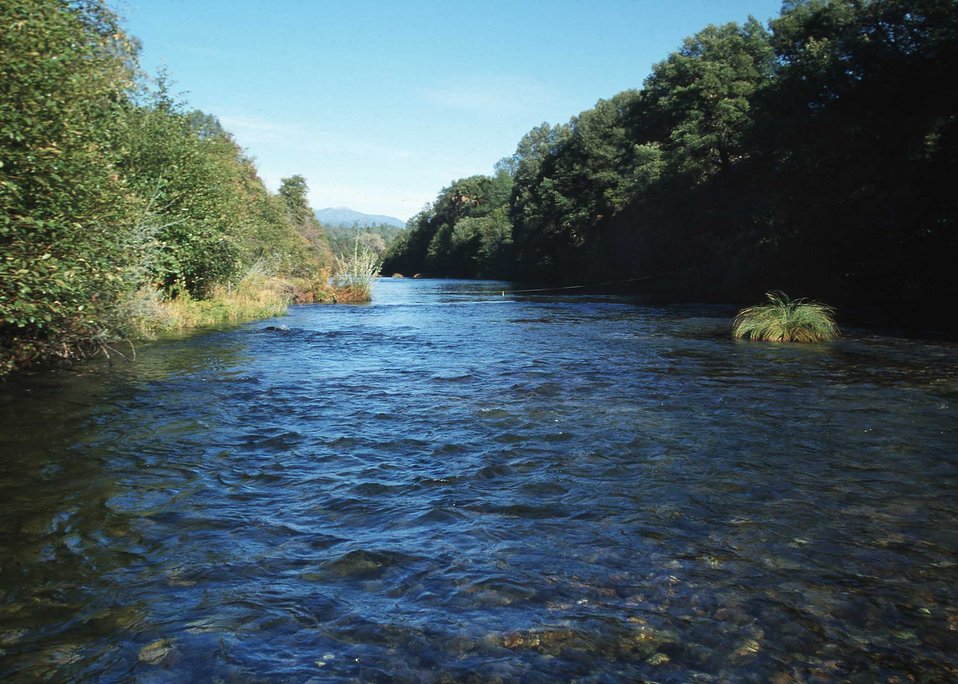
Scenic Clear Creek, site of the Lower Clear Creek Stream Restoration Project.